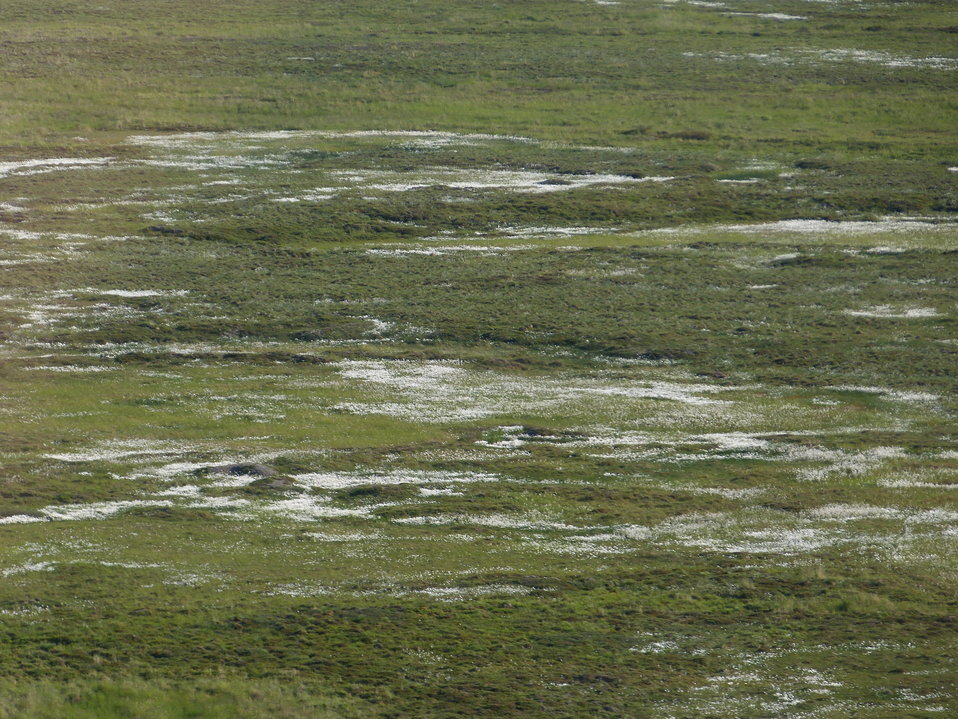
Cottongrass, Yukon Delta National Wildlife Refuge

Photo by: Kristine Sowl,
USFWS, Yukon Delta NWR, July 11, 2013